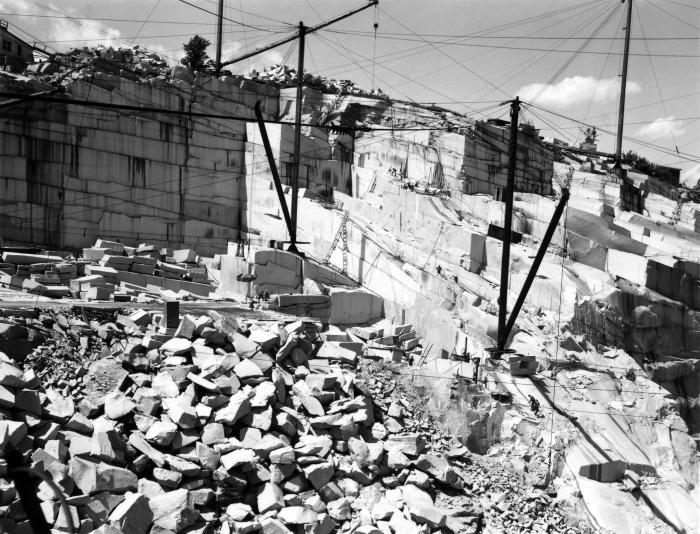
This 1950 photograph was provided by the Center for Disease Control's (CDC), National Institute for Occupational Safety and Health (NIOSH). The image depicted a stone quarry in Vermont. Visible were the quarry's granite walls, derricks (fixed cranes), and suspended overhead, 'sky-guys' and 'deadmen' cables. Workers can be exposed to potential respiratory health hazards as well as other physical injuries when working in the stone cutting and quarrying industries. This photograph appeared in the December, 1950, 'Industrial Hygiene Newsletter'.